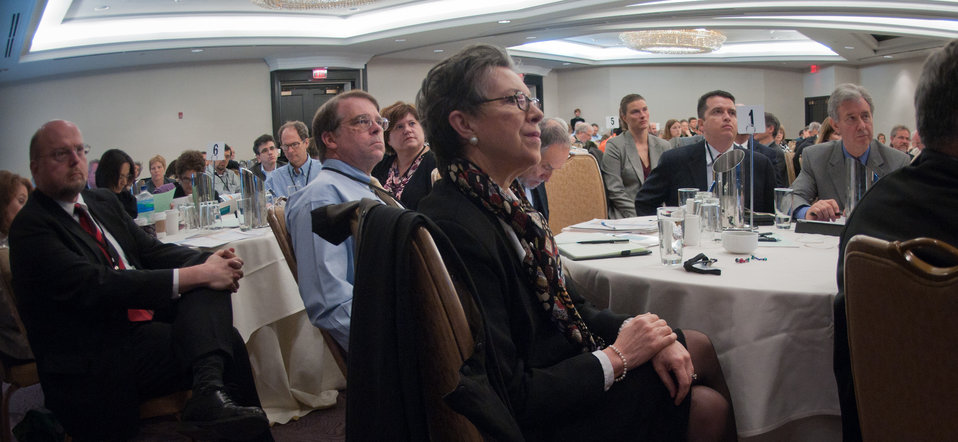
U.S. Department of Agriculture (USDA) Under Secretary for Research, Education and Economics Dr. Catherine Woteki (c.) and participants listen to Agriculture Secretary Tom Vilsack's keynote address to the Rural Wealth Creation and Livelihoods national conference for practitioners, researchers and policymakers, held at the Dupont Hotel, Washington DC, on Monday October 3, 2011. USDA partnered with the Ford Foundation to sponsor the conference.